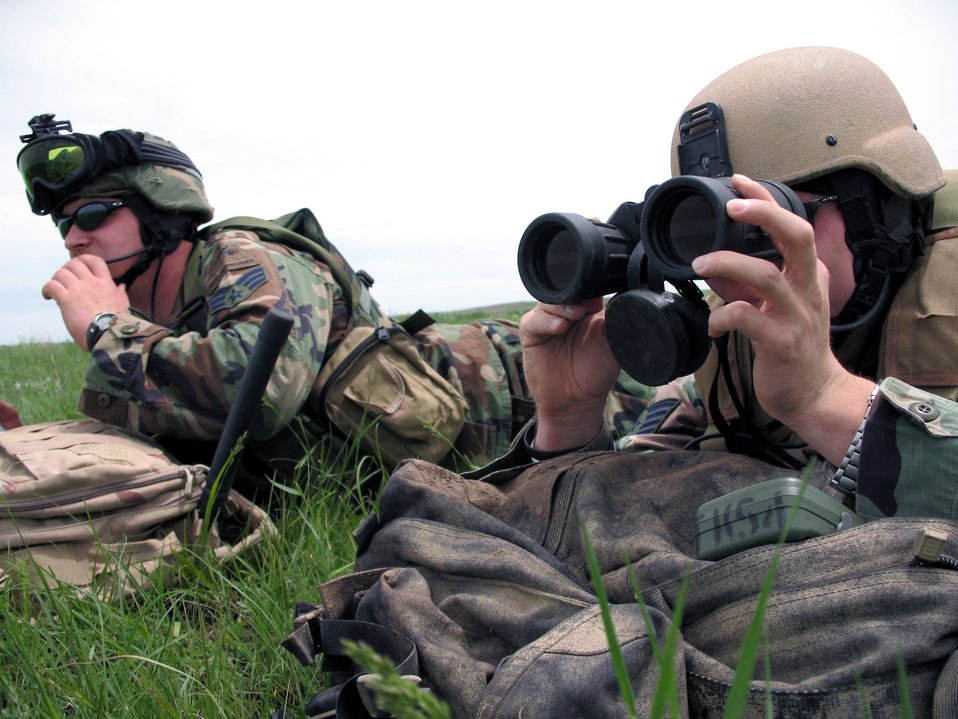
Attack controllers call in air strikes at Kansas range

Senior Airman Rusty Welch (left) talks to A-10 Thunderbolt II pilots overhead as Staff Sgt. Josh Carter looks at targets on the Smoky Hill Air National Guard Range, Kan. The joint terminal attack controllers were at the range training for deployments to Iraq and Afghanistan. There they work alongside the Army and Marines providing air power to troops on the ground.